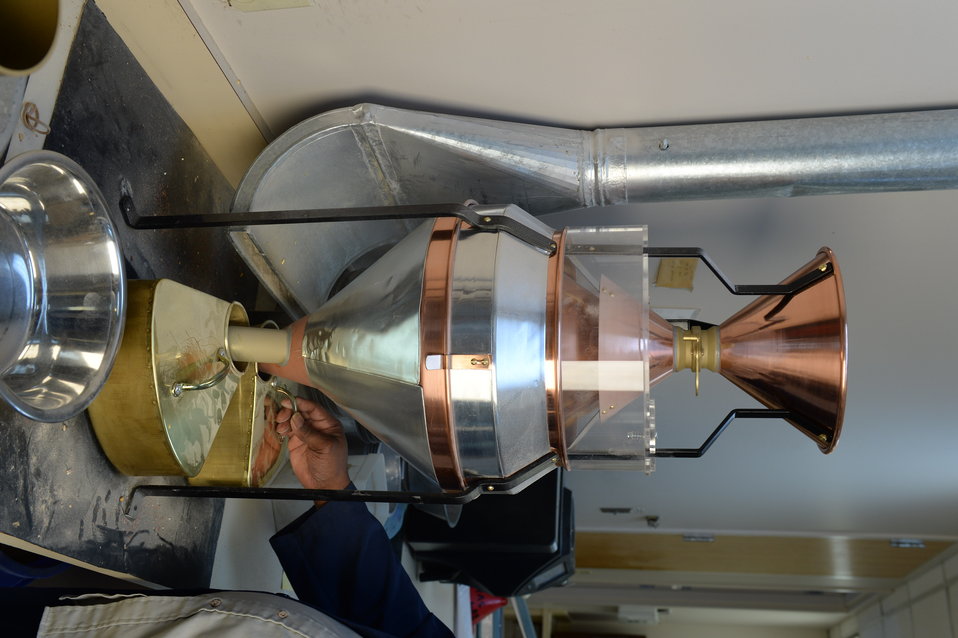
A U.S. Department of Agriculture (USDA) Grain Inspection, Packers and Stockyards Administration (GIPSA) Federal Grain Inspection Service (FGIS) scientist tests corn at the FGIS inspection laboratory in New Orleans, LA on Monday, Nov. 18, 2013.